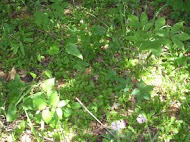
Fringed campion

Scientific name: Silene polypetala
Status: Endangered